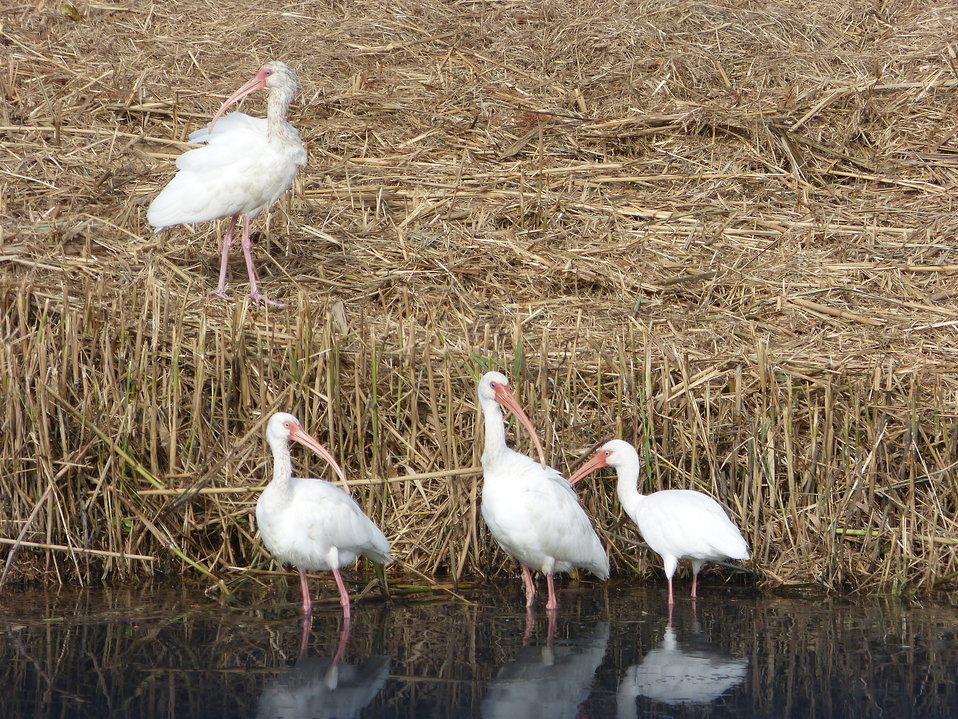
White ibis in the water

White ibis at Mattamuskeet National Wildlife Refuge in North Carolina.